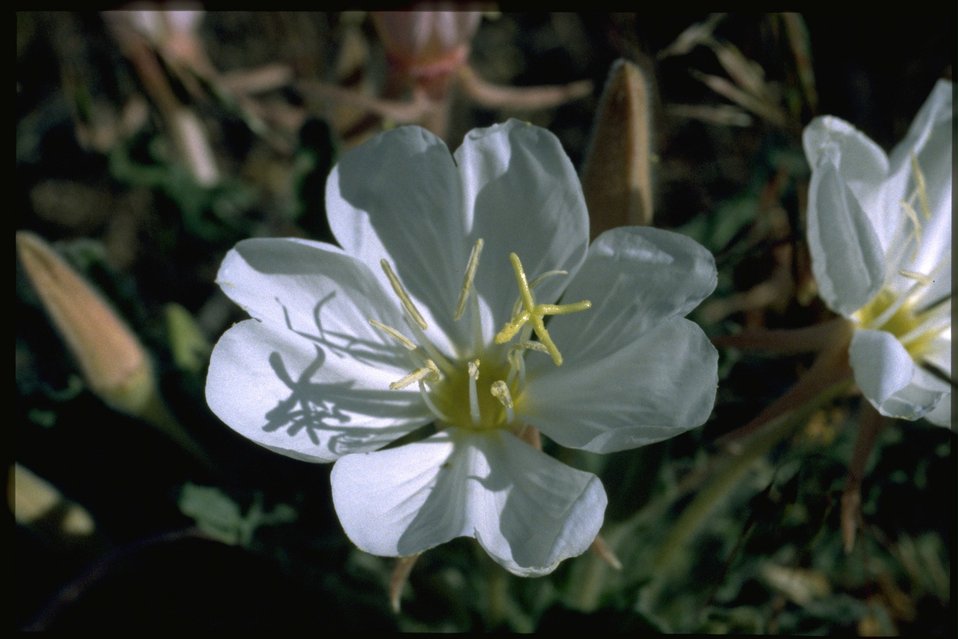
Closeup shot of Oenothera.